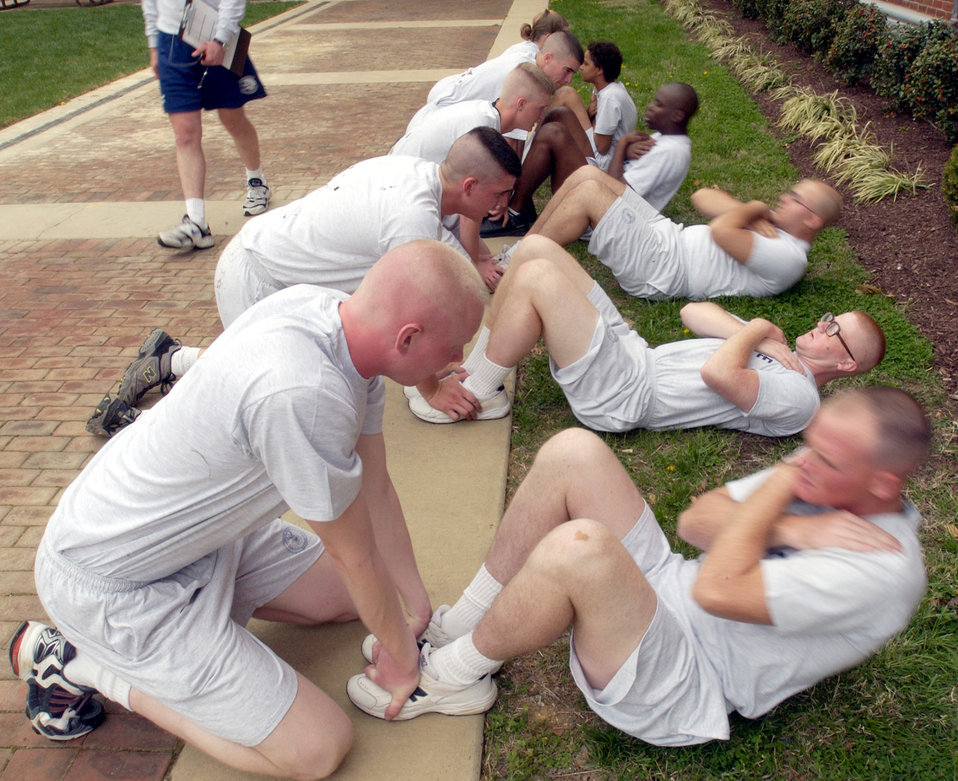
Crunch time

BOLLING AIR FORCE BASE, D.C. -- Trainees at the U.S. Air Force Honor Guard technical school here participate in a physical-fitness routine several times a week. Their routine, which includes push-ups, crunches and a 1.5-mile run, mirrors the proposed Air Force fitness standards, which will be implemented in January 2004.